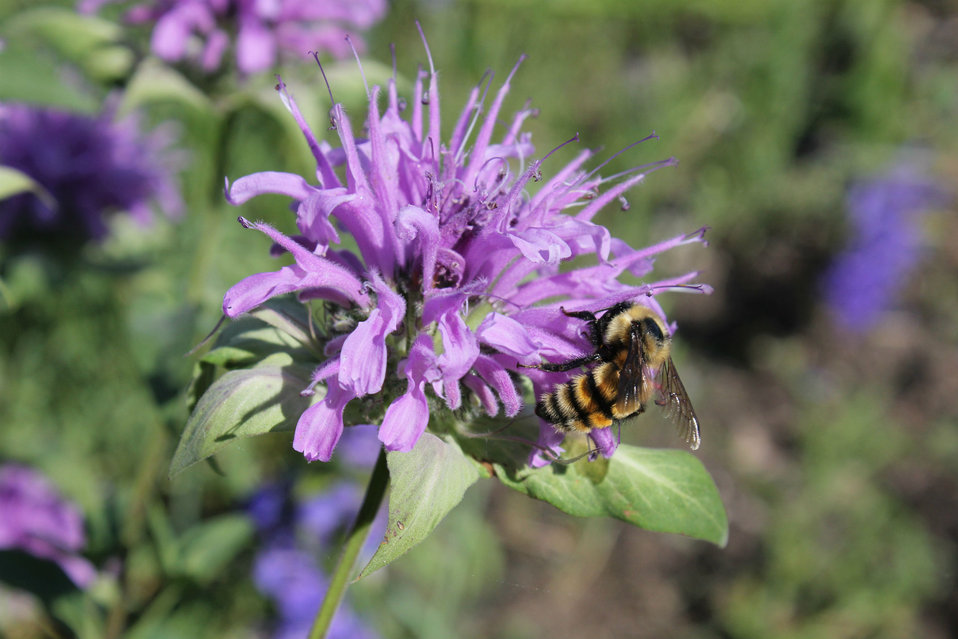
Bee on Wild Bergamot

A member of the mint family, wild bergamot is very attractive to pollinators.